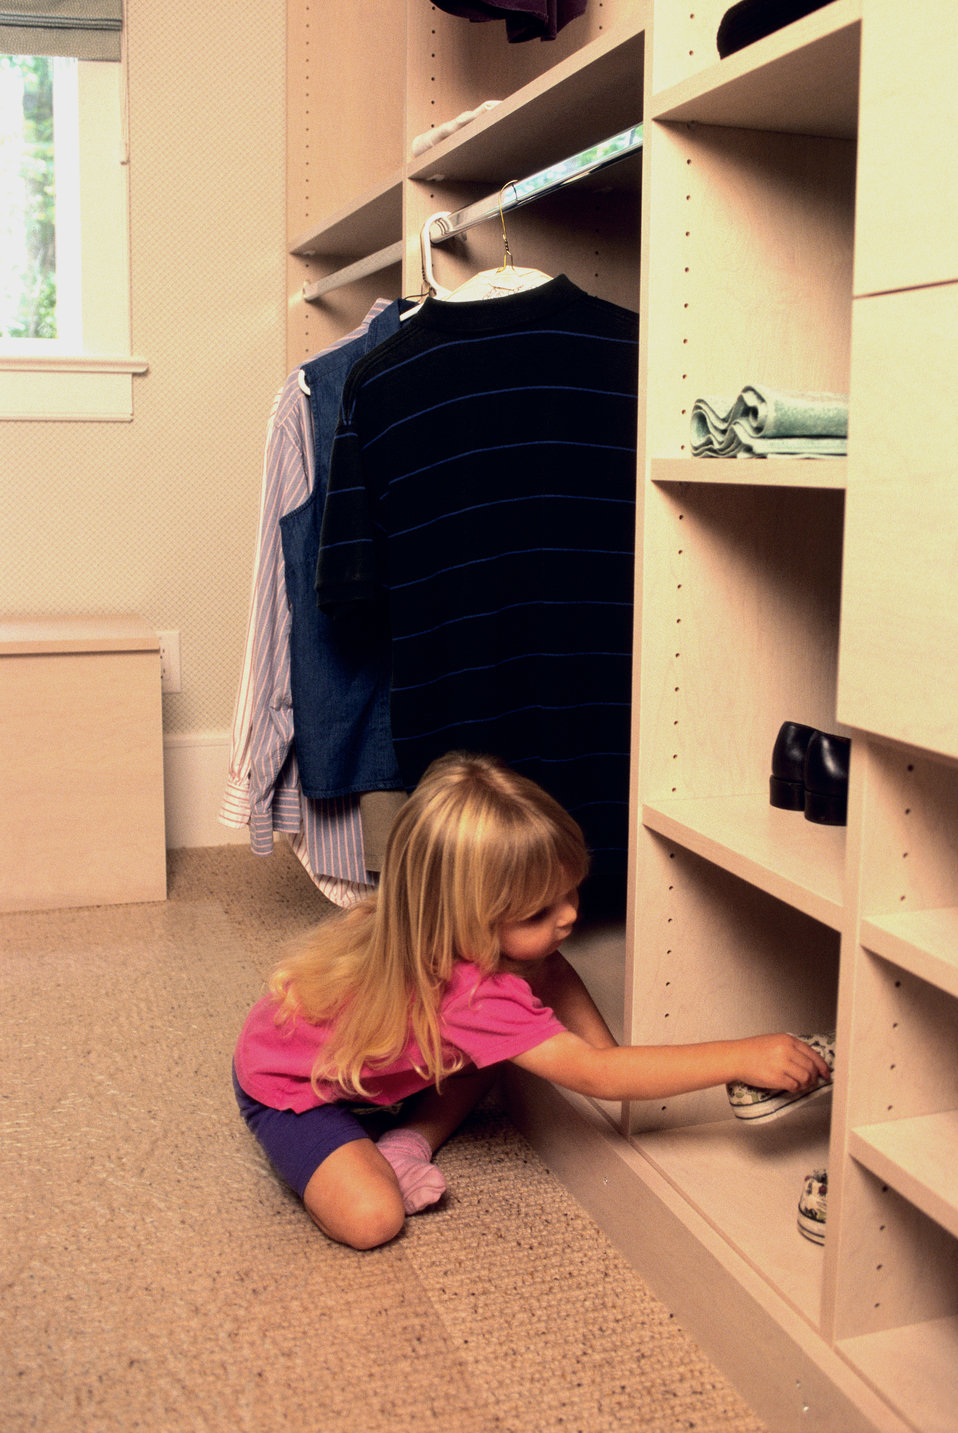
The young girl depicted in this 2000 image was shown putting away, or removing her sneakers from a shelf, while she was seated on the carpeted floor of a walk-in closet. The closet was designed to facilitate usage by people who had trouble reaching, were seated in a mobility device, or were of short stature. Demonstrated here was one of the benefits enjoyed by children, and showed how widespread are the concepts of universal design.The Center for Universal Design (CUD) is a national research, information, and technical assistance center that evaluates, develops, and promotes accessible and universal design in housing, buildings, outdoor and urban environments and related products. The Center's work manifests the belief that all new environments and products, to the greatest extent possible, should be usable by everyone regardless of their age, ability, or circumstance.